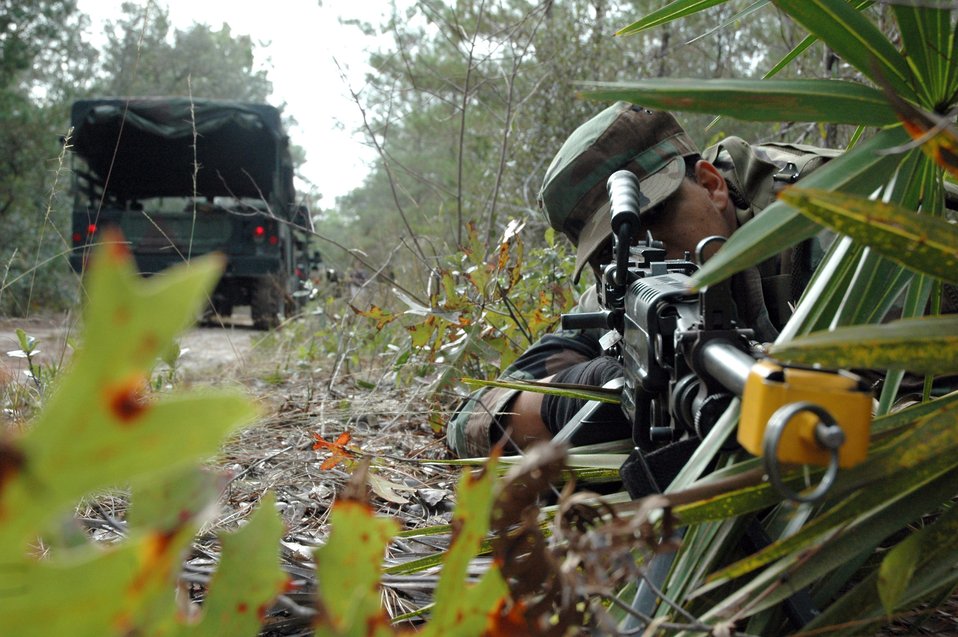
Brave defenders

EGLIN AIR FORCE BASE, Fla. (AFPN) -- Airman Brandon Gomes takes cover before helping defend a mounted patrol during Brave Defender training. This is a two-week training course security forces and special forces Airmen attend before deployment. Airman Gomes is with the 96th Security Forces Squadron at Eglin Air Force Base, Fla.